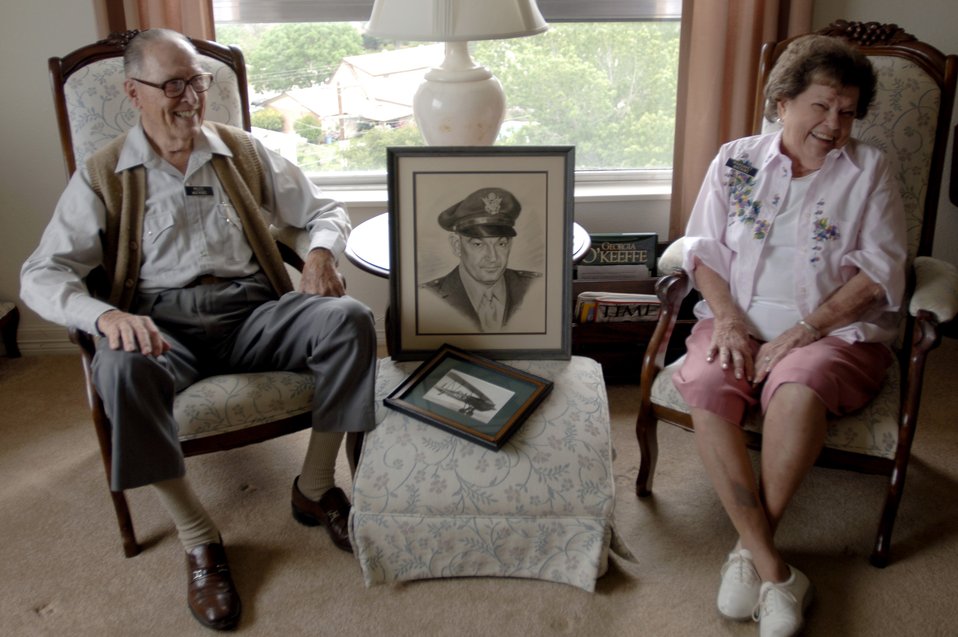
Memories of father stay strong, even after 63 years

Margaret Ramey Watkins and her husband, retired Air Force Lt. Col. Miles Watkins, sit with a portrait of her father, Brig. Gen. Howard K. Ramey. General Ramey was a founding member of the Order of Daedalians, a fraternal order of military pilots.